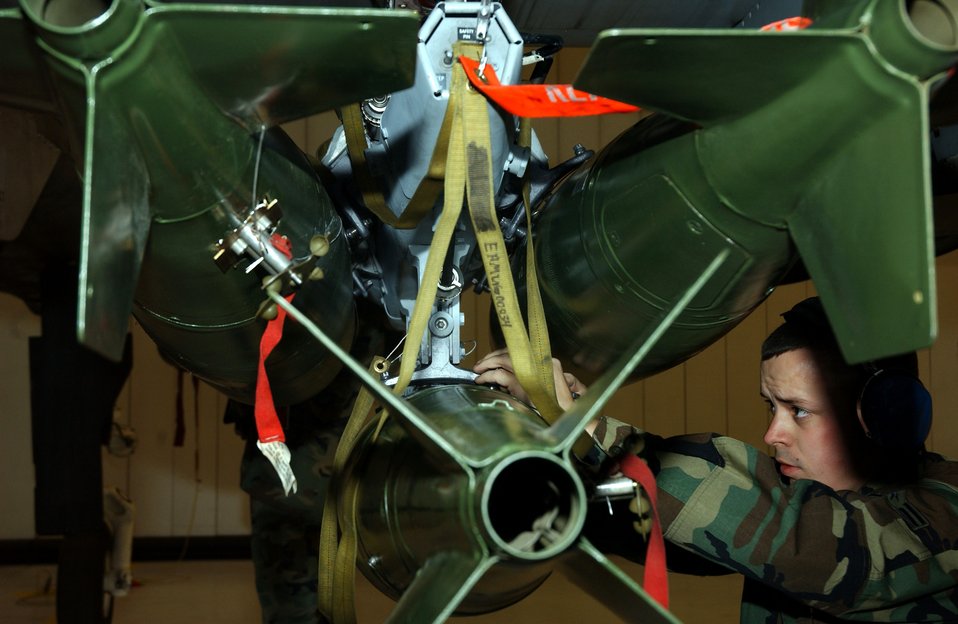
Ejector rack

EIELSON AIR FORCE BASE, Alaska (AFPN) -- Airman 1st Class Justin Martin adjusts the sway braces of a triple ejector rack. The rack holds bombs steady on A-10 Thunderbolt IIs. Airman Martin is a weapons loader assigned to the 354th Aircraft Maintenance Squadron at Eielson Air Force Base, Alaska.